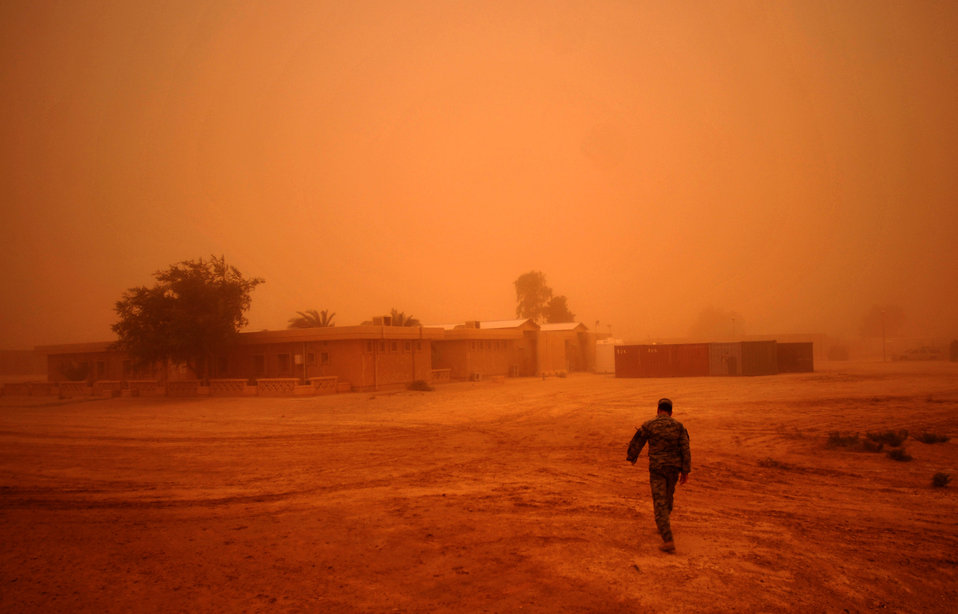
Braving the elements

Maj. Gen. Russ Handy braves a sandstorm at Al Asad Air Base, Iraq, Sept. 27, 2011. As the commander of the 9th Air and Space Expeditionary Task Force-Iraq and director of Air Component Coordination Element- Iraq, the general is the senior U.S. Air Force representative in Iraq and represents the combined force's air component commander to the commanding general of U.S. Forces-Iraq.